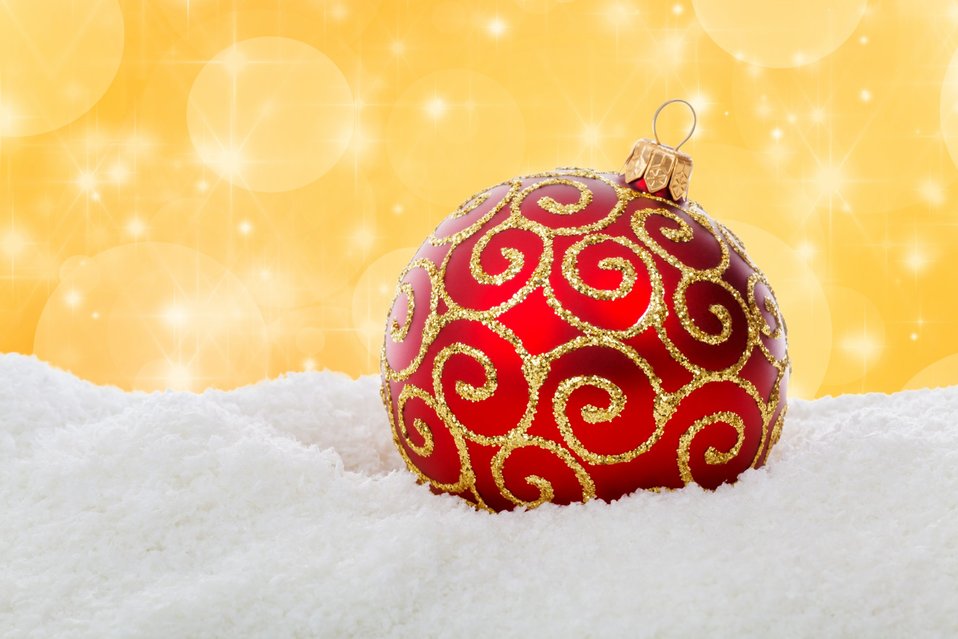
Red christmas ball in snow

Red golden christmas ball in snow on golden sparkling background.